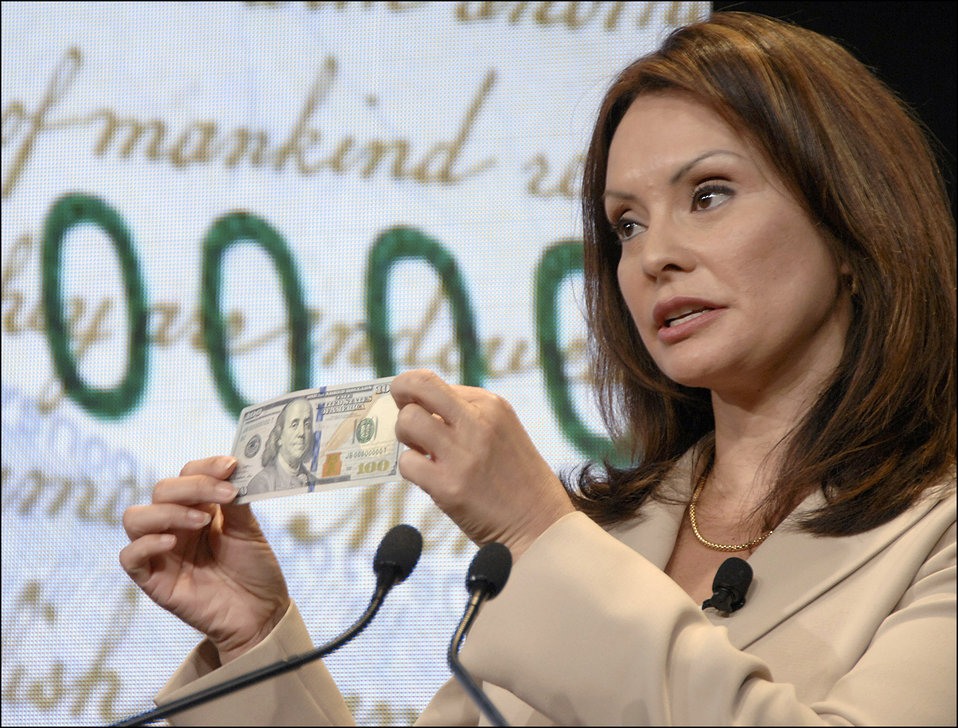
Unveiling of new $100 note, 4/21/2010

Treasurer Rios holding up the new $100 note at the Treasury Department on April 21, 2010.